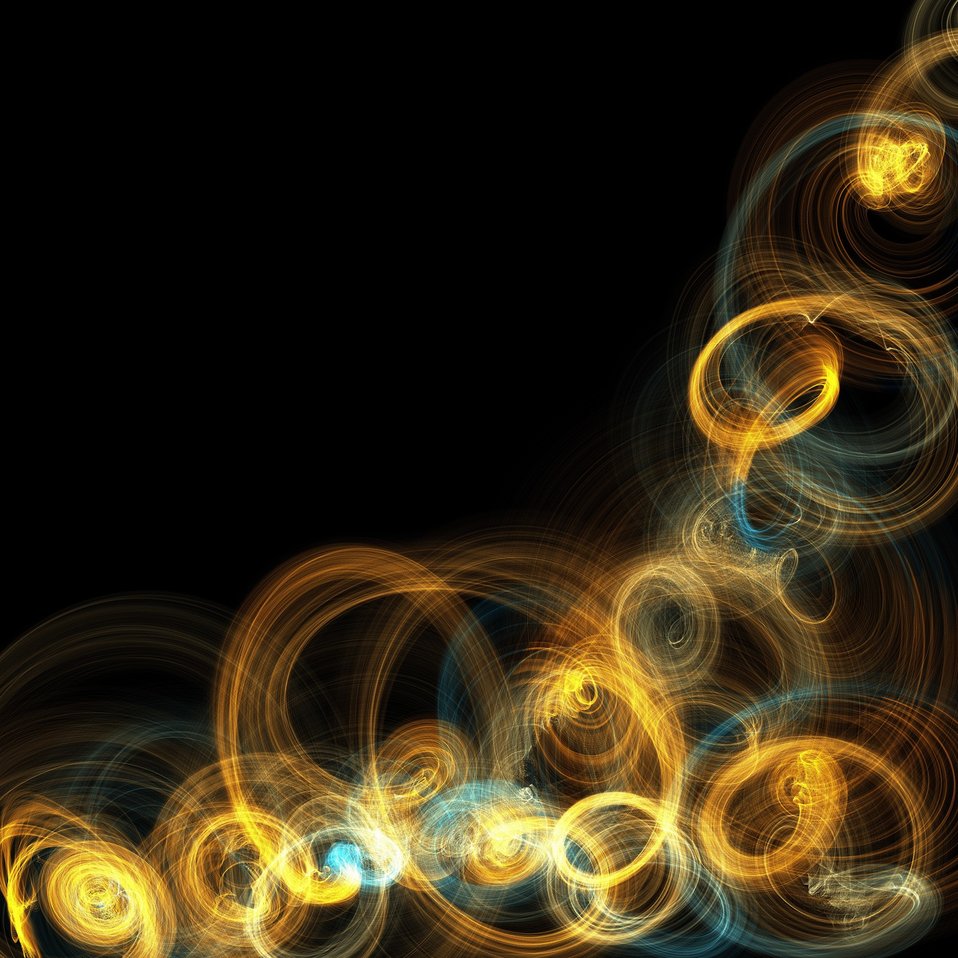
Electric gold waves

Digitally created electric gold swirly waves painted against a black background..